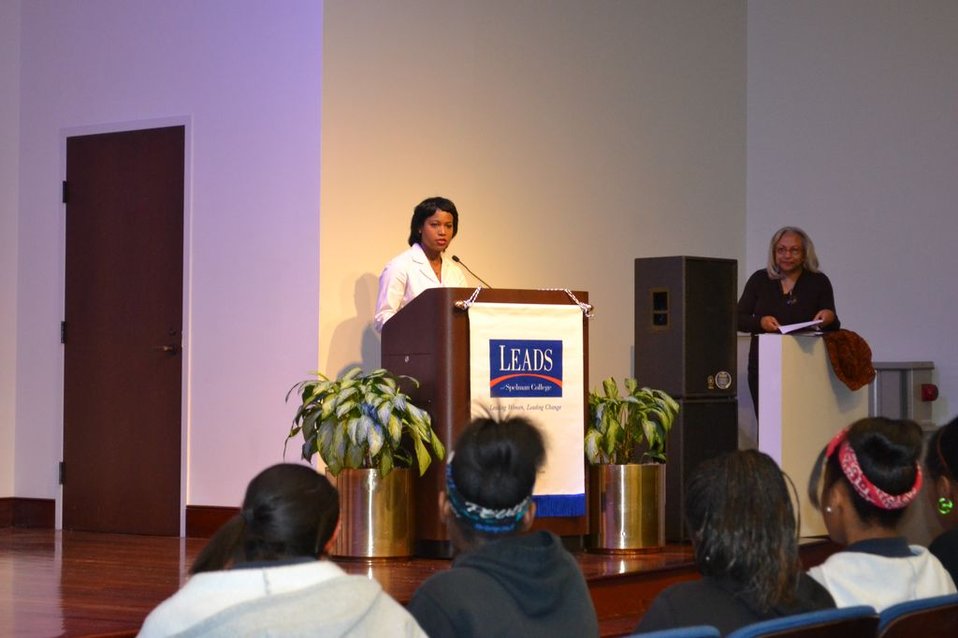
Spelman Girls Institute Nov 2012

In Dot Harris' keynote remarks, she shared STEM programs at the Department of Energy and information about STEM careers.